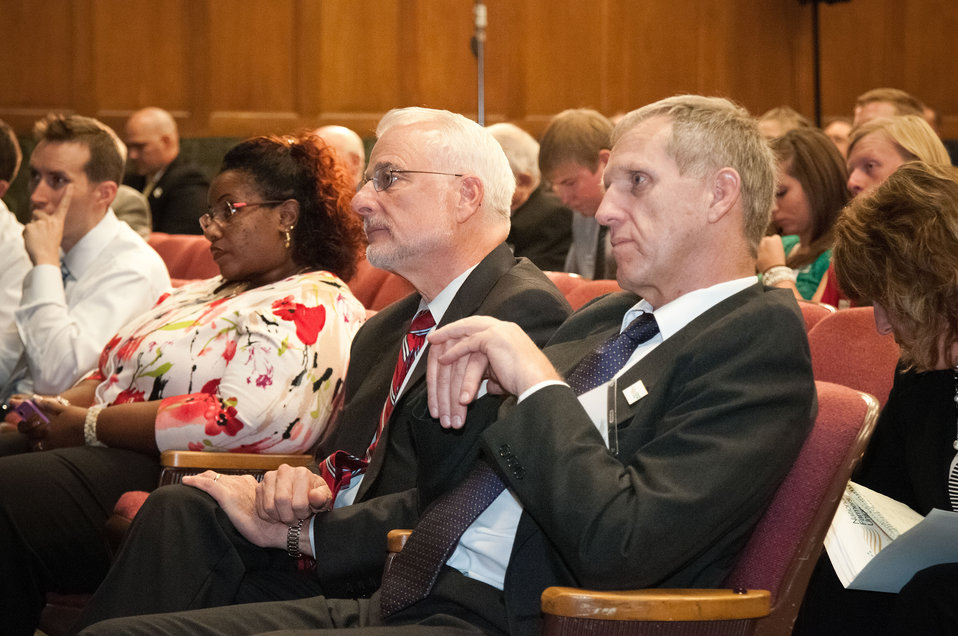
U.S. Department of Agriculture (USDA) Natural Resources Conservation Service (NRCS) Chief Dave White (left) and National Farmers Union President Roger Johnson (right) listen to Agriculture Secretary Tom Vilsack address the National Farmers Union at the USDA in Washington, D.C. on Monday, Sept. 10, 2012. Secretary Vilsack discussed the economics of agriculture, conservation, exports, Rural America and the 2012 Farm Bill.